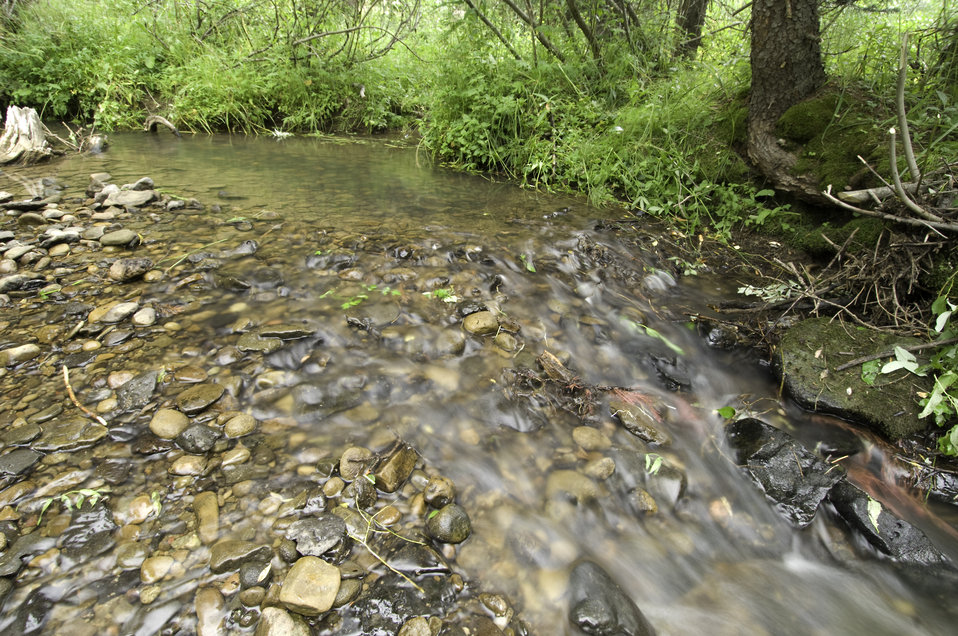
Stream crossings by roads can pose serious threats to fish ecosystems. The cumulative effect of culverts, fords, and other structures throughout a stream channel can significantly change the streams geomorphology (study of the characteristics, origin, and development of landforms) and impair fish passage by blocking valuable spawning and rearing habitat. The U. S. Department of Agriculture (USDA) Forest Service’s (FS) Aquatic Organism Passage (AOP) project is to identify the stream crossings in National Forests that have poorly designed crossings and replace those crossings to improve water quality and native habitat. This photo was taken in the White River National Forest, Glenwood Springs, Colorado on August 17, 2007.USDA photo.